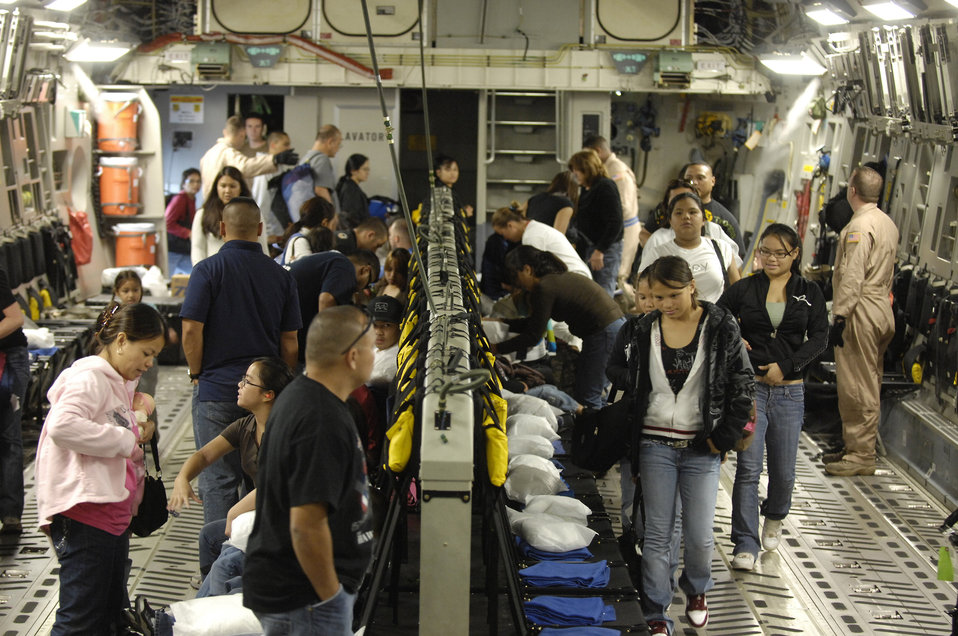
Hickam aircrew delivers vehicles to warfighters

Passengers board a C-17 Globemaster III Dec. 17, 2008, at Hickam Air Force Base, Hawaii. The jet transported supplies to warfighters in Afghanistan.